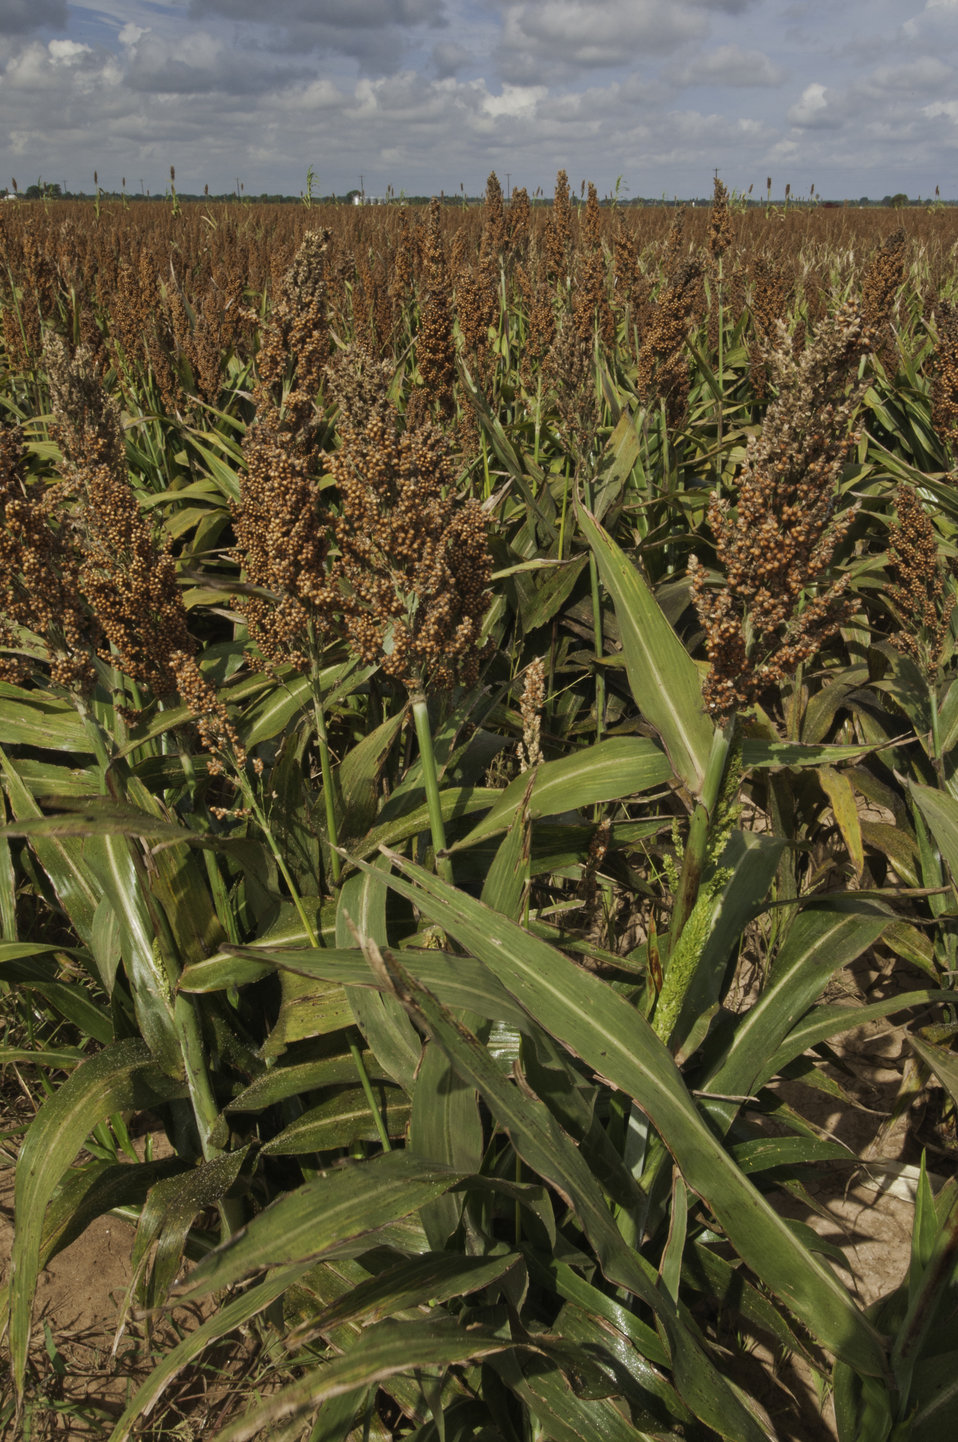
Grain sorghum grows on the Wilder Farms Navasota, TX on Aug. 23, 2013. The ground shows signs of the Texas drought but the crop shows no ill affects from the drought USDA photo by Bob Nichols.